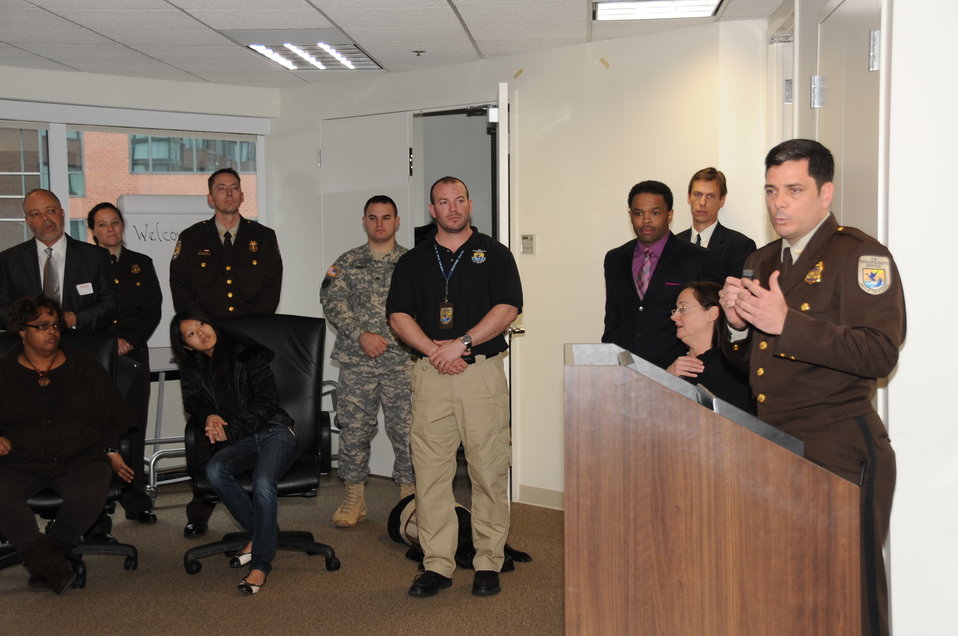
Honoring and Celebrating our Veterans

11.07.2012 Employees gathered in the Arlington Office to honor FWS Veterans